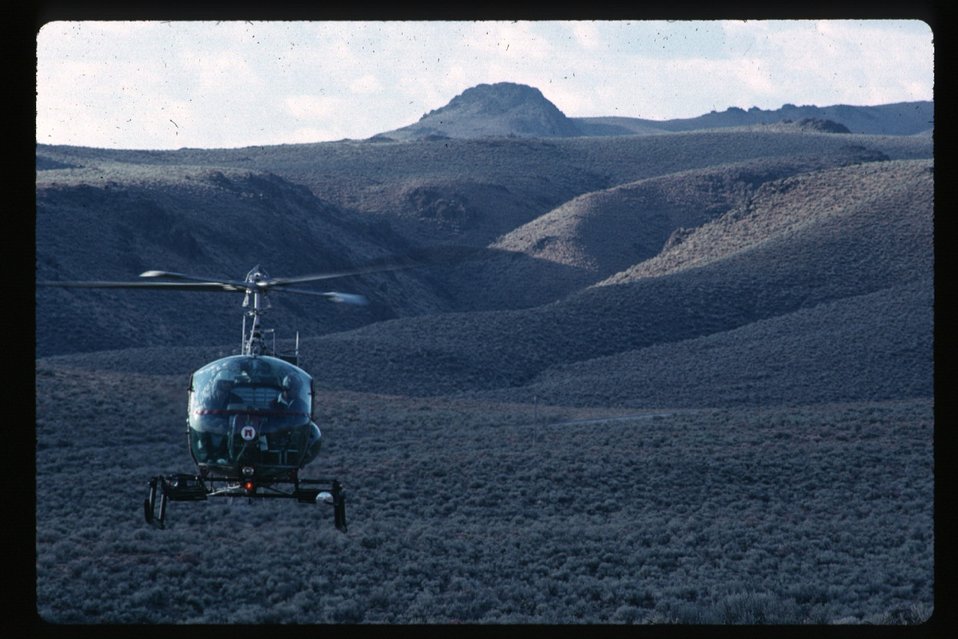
Wild Horse and Burro Adoption Program Gathering Helicopter LSRD Lower Snake River District